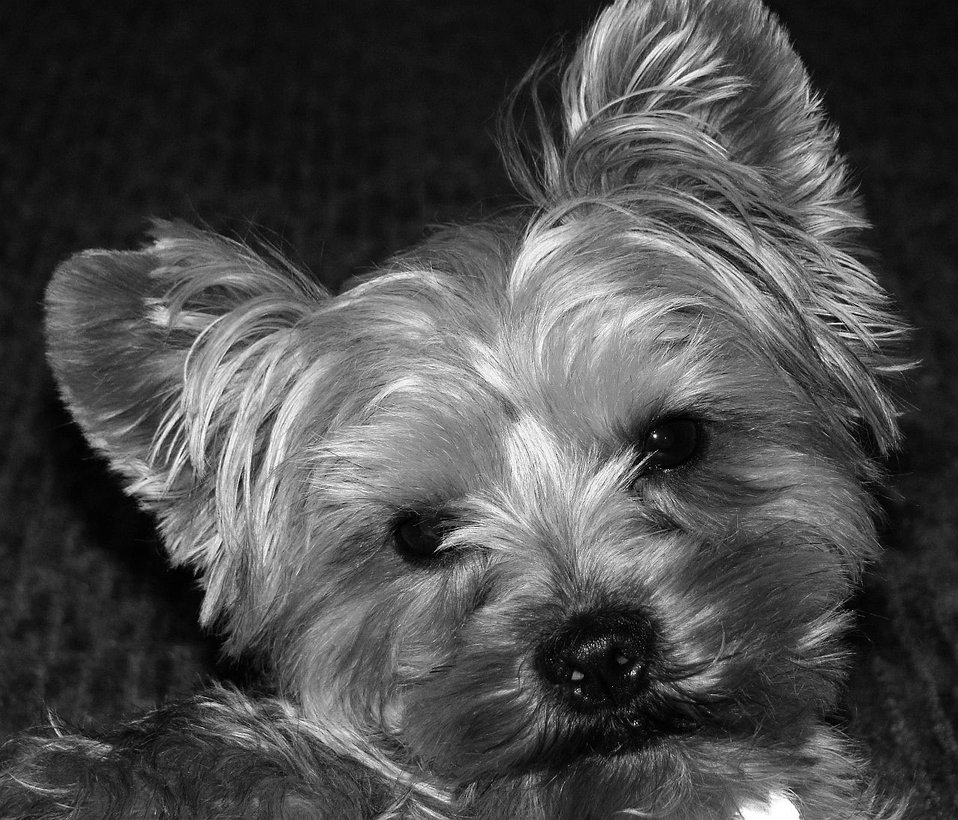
Beware of the dog

This little fellow loves to pose.